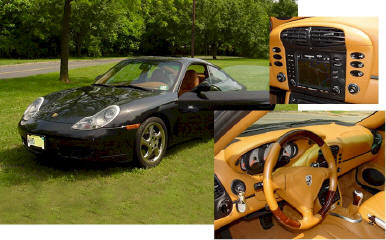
2000 Millennium 911 Carrera 4 Coupé